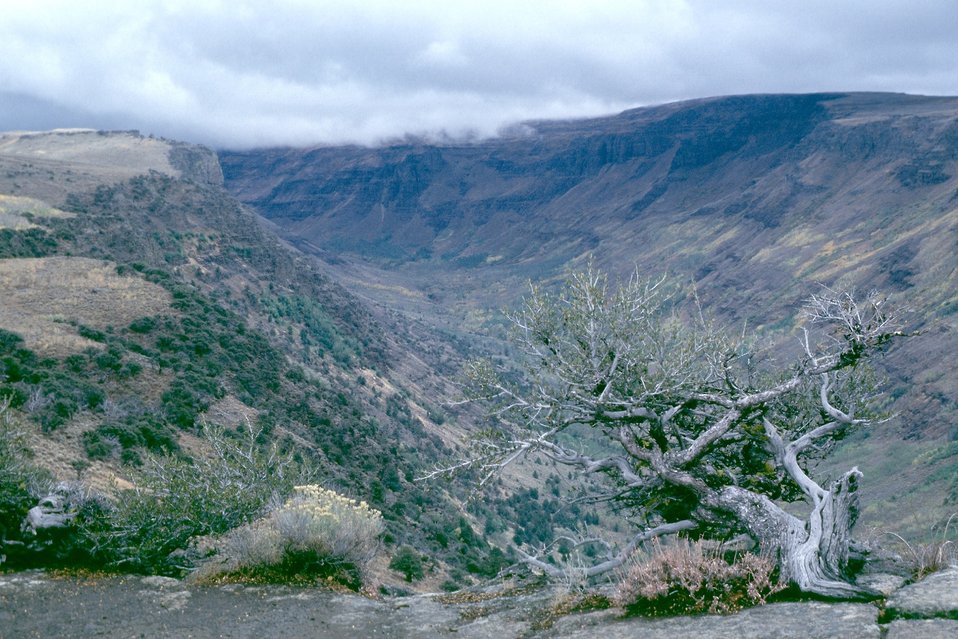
Little Blitzen looking East from Pruitt Overlook, Steen's Mountain.